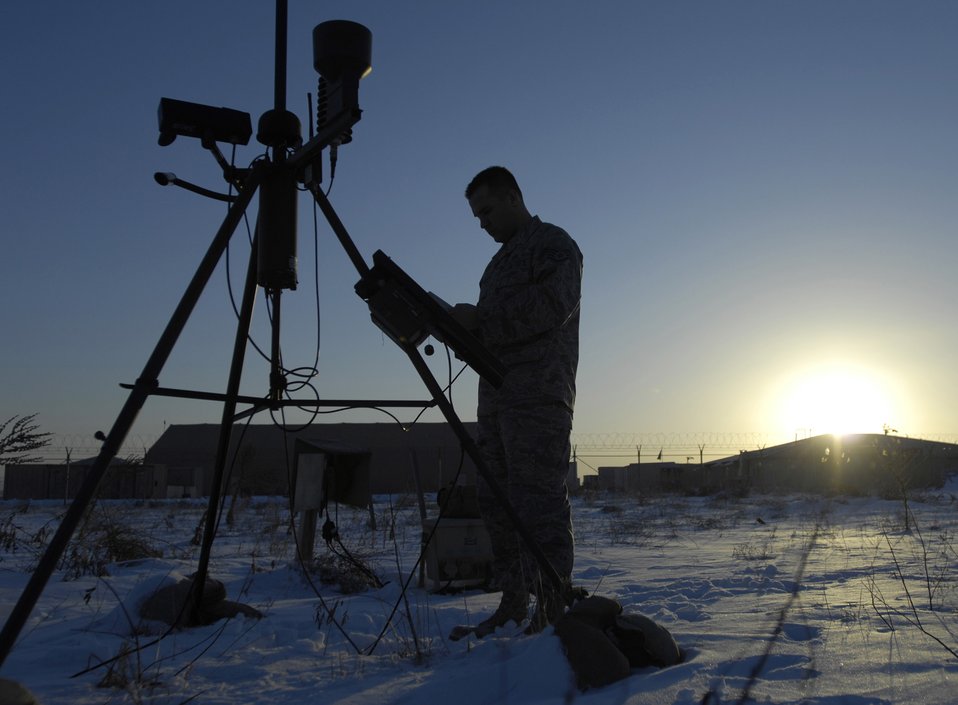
Tomorrow's weather: cold

Staff Sgt. Michael Ragsdale reviews daily weather inputs with the Tactical Meteorological Observing System at Manas Air Base, Kyrgyzstan.